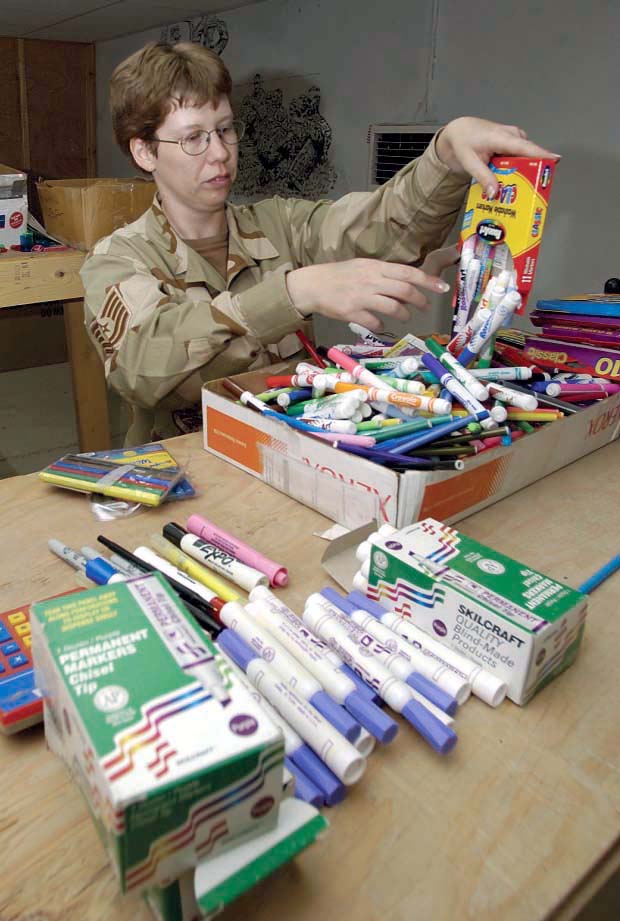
Volunteers collect supplies for local Iraqi schools

KIRKUK AIR BASE, Iraq -- Tech Sgt. Loretta Grantman empties boxes of markers so they may be sorted into bags for local Iraqi schoolchildren. She is assigned to the 506th Air Expeditionary Group's legal office.